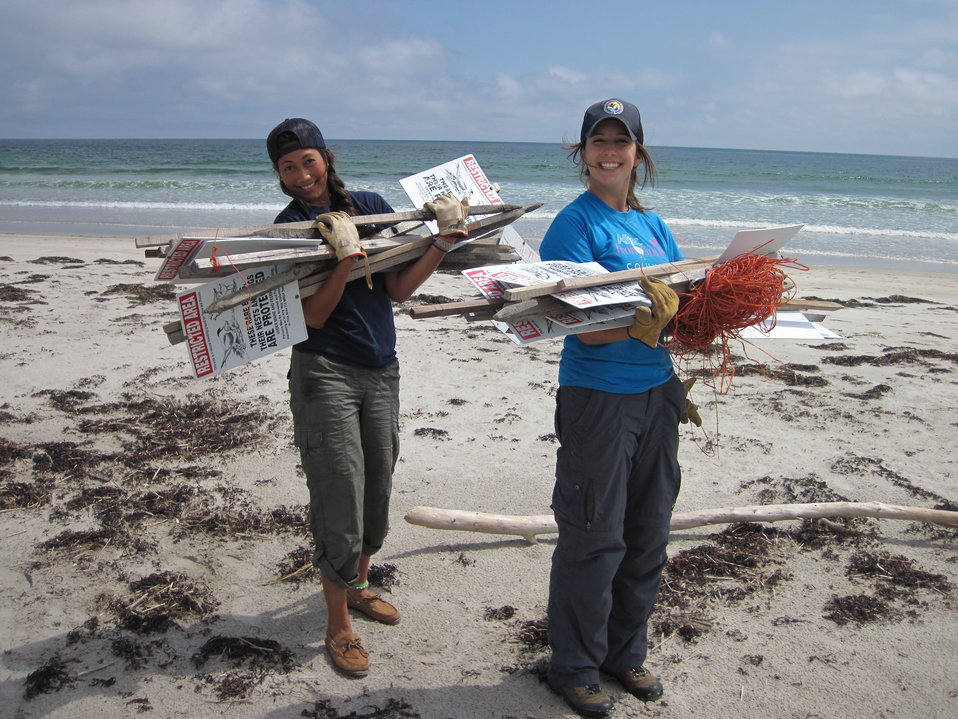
Protecting Piping Plovers

Interns at Rachel Carson National Wildlife Refuge are about to post signs on the beach to inform visitors not to disturb nesting piping plovers.